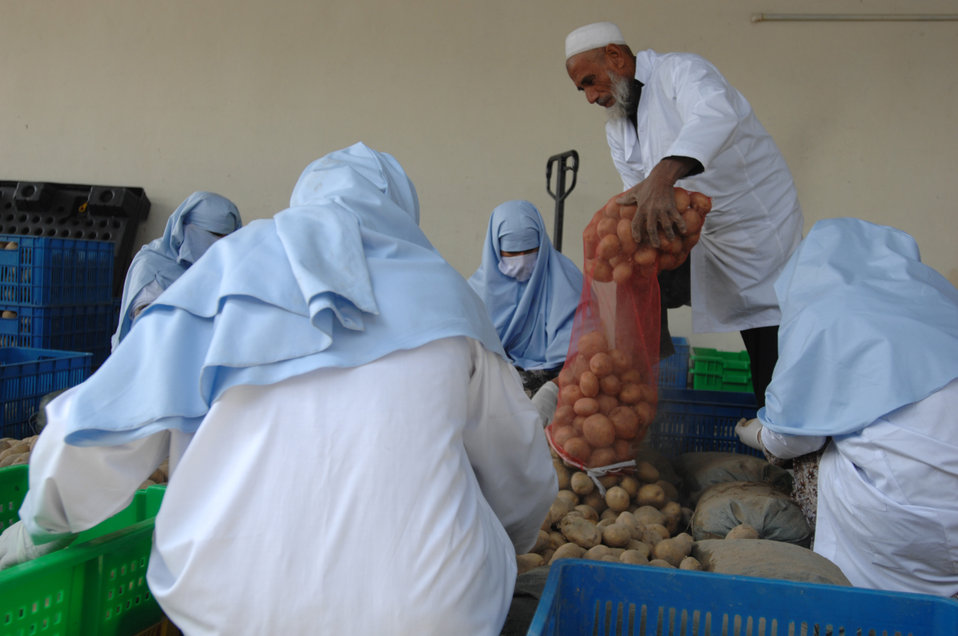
110209sv Shah184

Women sort and grade potatoes at the Surkh Rod vegetable packing facility in Nangarhar province on Wednesday, February 9, 2011. (S.K. Vemmer/Department of State)